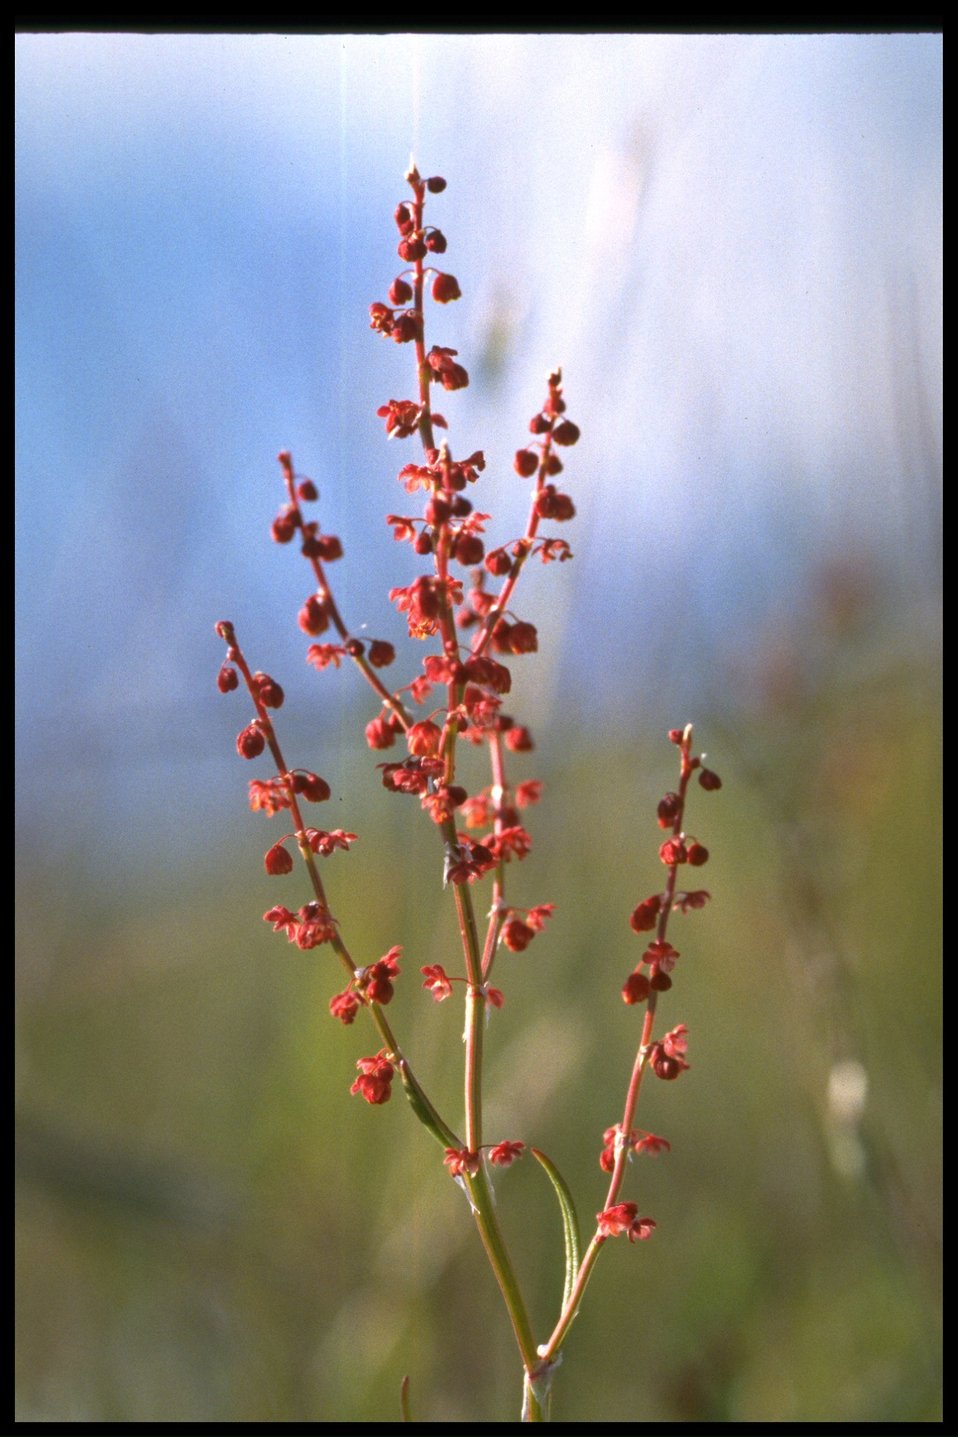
Small tree just blooming.